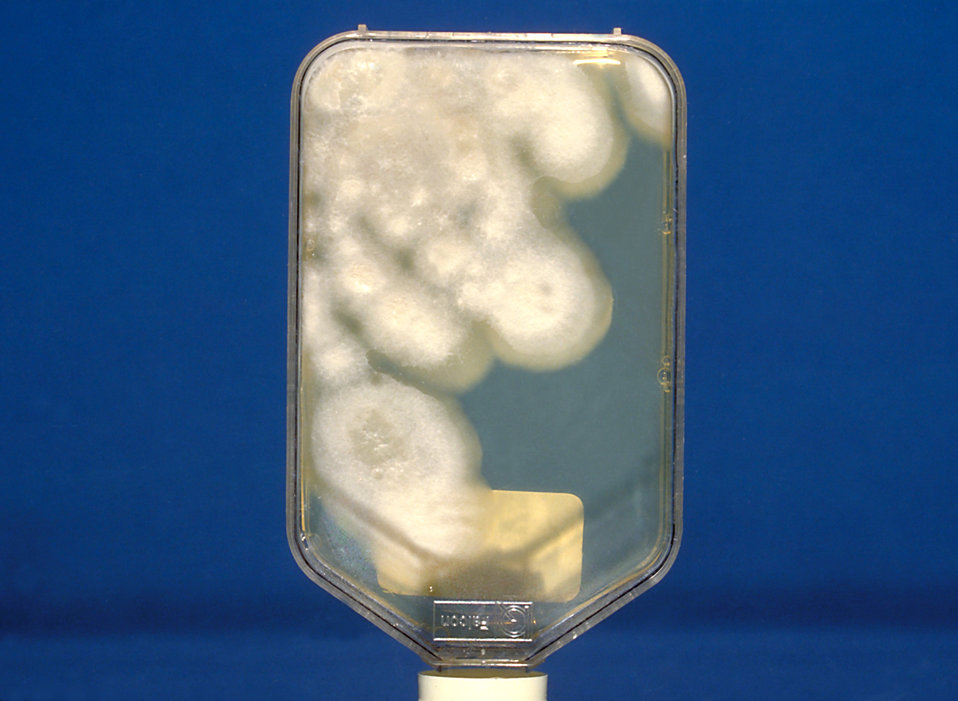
This was a Sabouraud's dextrose agar culture of Coccidioides immitis with chloramphenicol and cycloheximide after 2 wks.